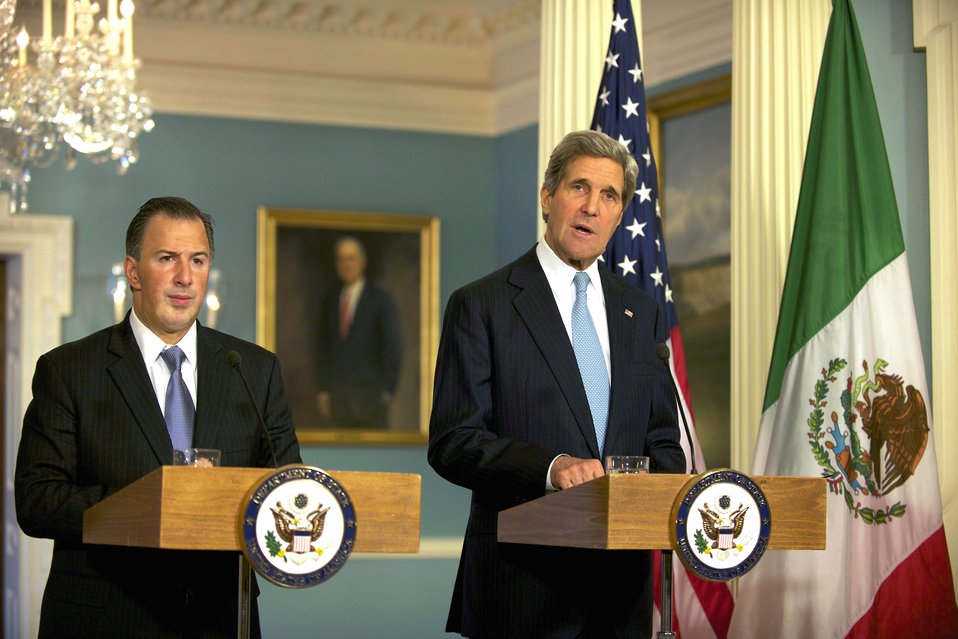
Secretary Kerry and Mexican Foreign Secretary Meade Address Reporters

U.S. Secretary of State John Kerry and Mexican Foreign Secretary Jose Antonio Meade address reporters after their bilateral meeting at the U.S. Department of State in Washington, D.C., on April 19, 2013.